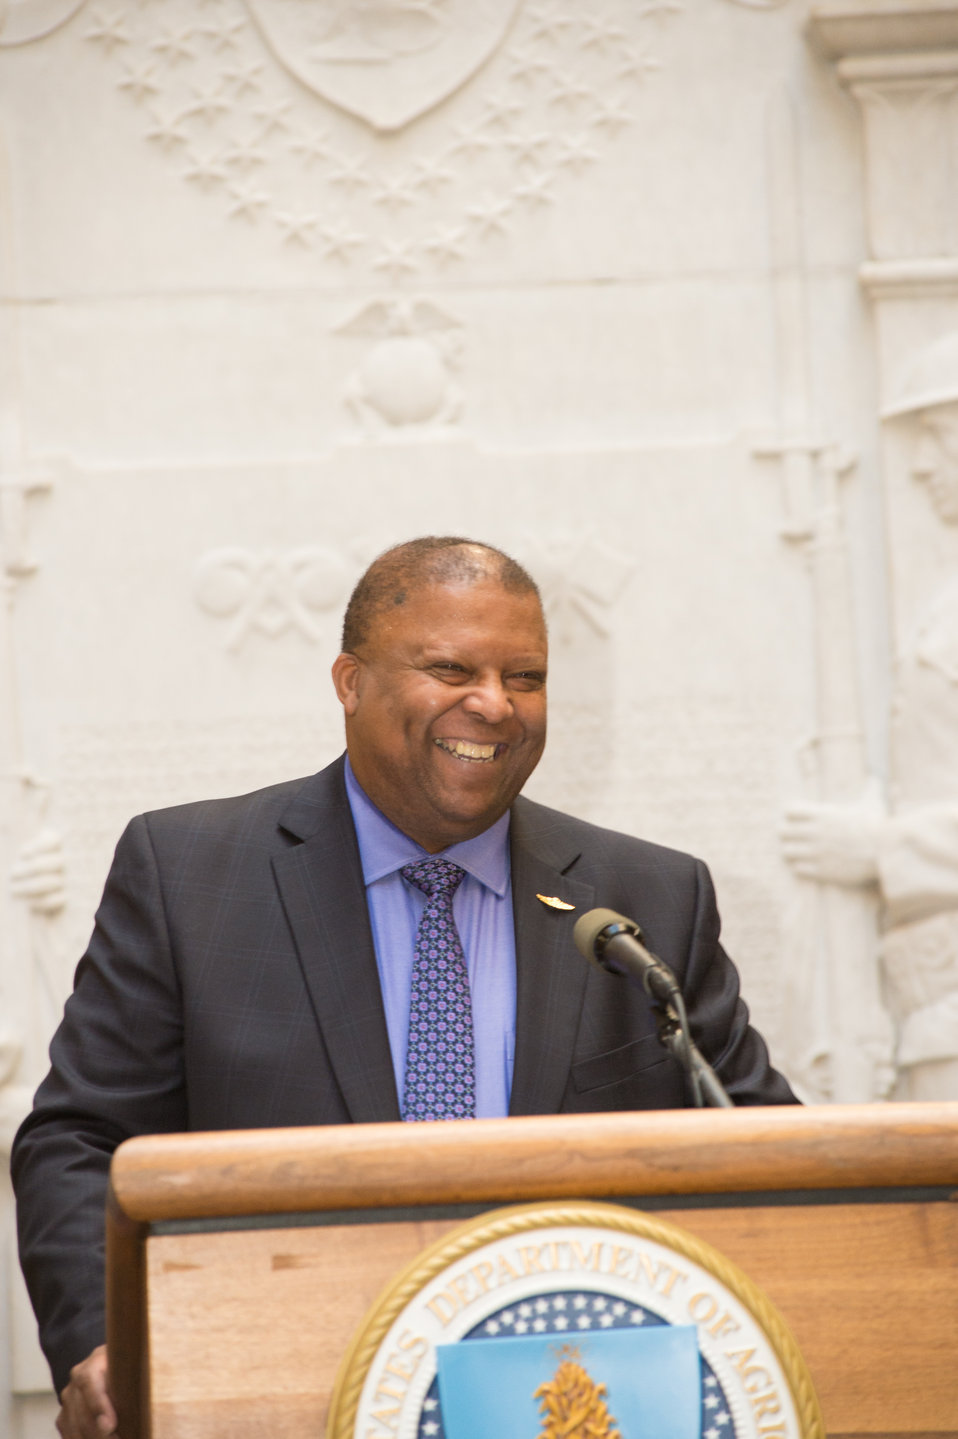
Douglas Keeler, Feds Feed Families National Program Manager, United States Department of Agriculture (USDA), Associate Deputy Administrator, Agricultural Marketing Service (AMS), Livestock, Poultry and Seed Division addresses employees and partner agencies at the USDA Feds Feed Families closing ceremony, on Wed., Nov. 13, 2013 in Washington, D.C. Federal employees nationwide stepped up the challenge of Feds Feed Families and gathered 9 million pounds of food for food banks across the nation and the National Capital Region for families in need setting an all time record high.